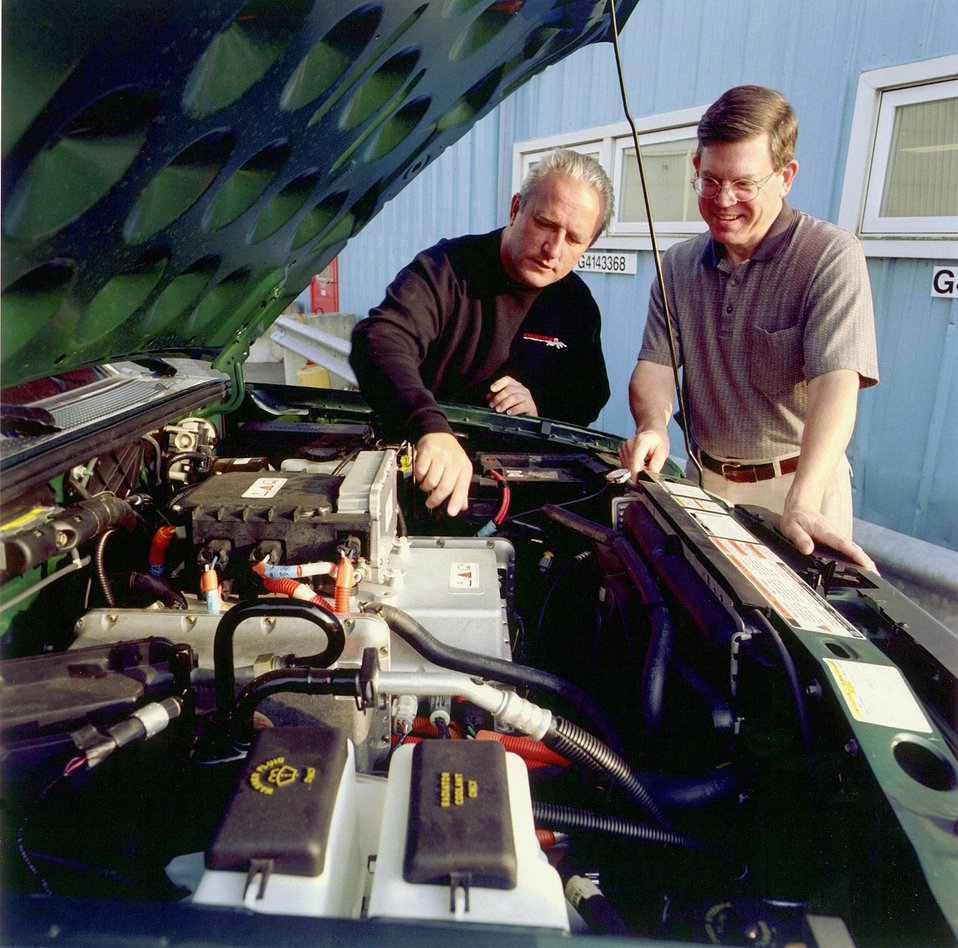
TECHNICIANS EXAMINE THE RUNNING GEAR OF ONE OF FERMILAB'S FORD RANGER ELECTRIC TRUCKS.

IN ORDER TO CUT DOWN ON THE USE OF PETROLEUM BASED FUELS, FERMILAB IS DEVELOPING A FLEET OF VEHICLES WHICH INCLUDES ELECTRIC VEHICLES AND ALTERNATIVE FUEL VEHICLES.